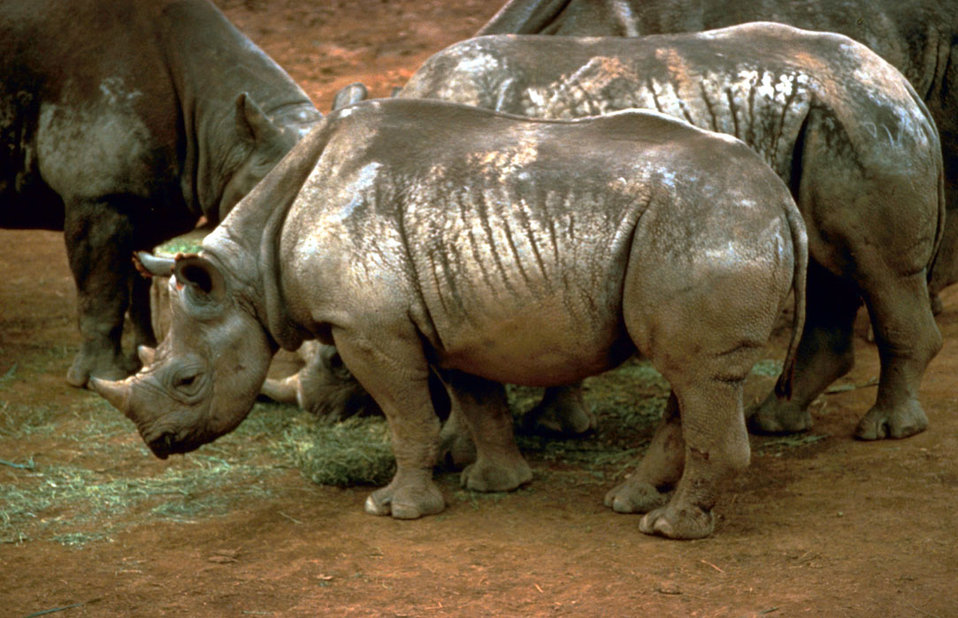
Black rhinoceros

The African black rhinoceros is an extinct subspecies. Historically, it once occurred across most of the west African savanna. Until recently, only a few individuals survived in northern Cameroon, but on July 8, 2006 the World Conservation Union declared the subspecies to be tentatively extinct.